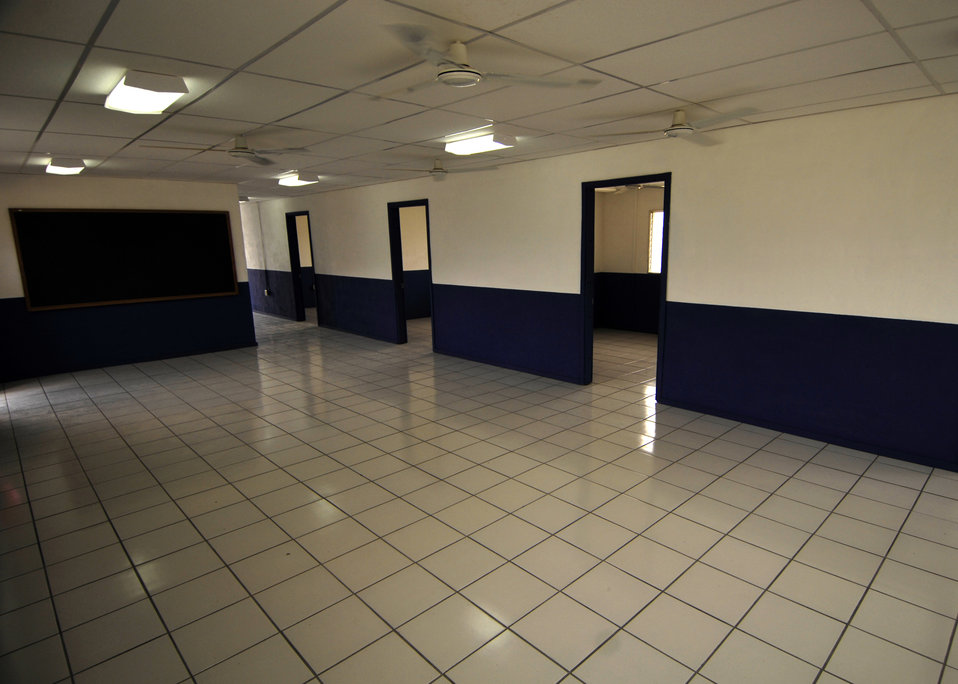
New Horizons Nicaragua 2007 closes out with ceremony

This is the inside of a five-room clinic, which is one of the New Horizons - Nicaragua 2007 project sites.